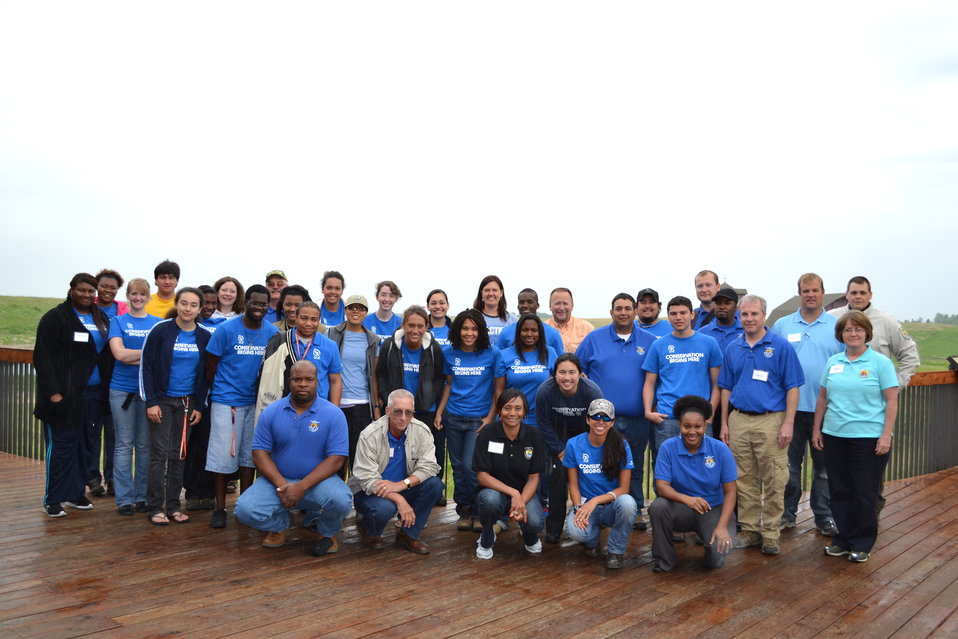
CDIP Group Shot cloudy

Midwest CDIP Class Photo 2012